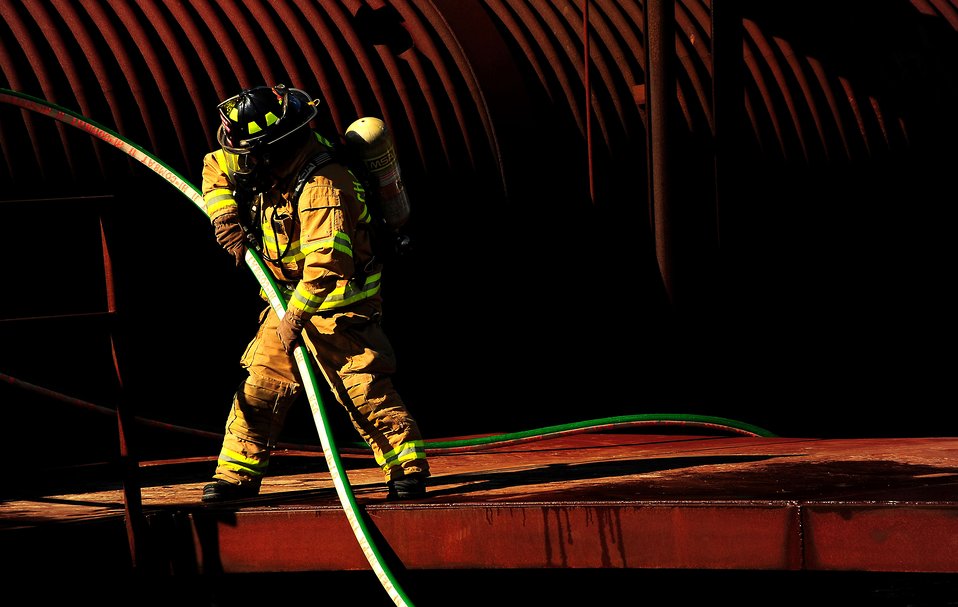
Fighting fire

Firefighters from the 628th Civil Engineer Squadron respond to a simulated interior fire Oct. 5, 2011, at Joint Base Charleston, S.C. The interior burn within the static training aircraft allows JB Charleston firefighters the ability to master their extinguishing abilities in case of an actual event.